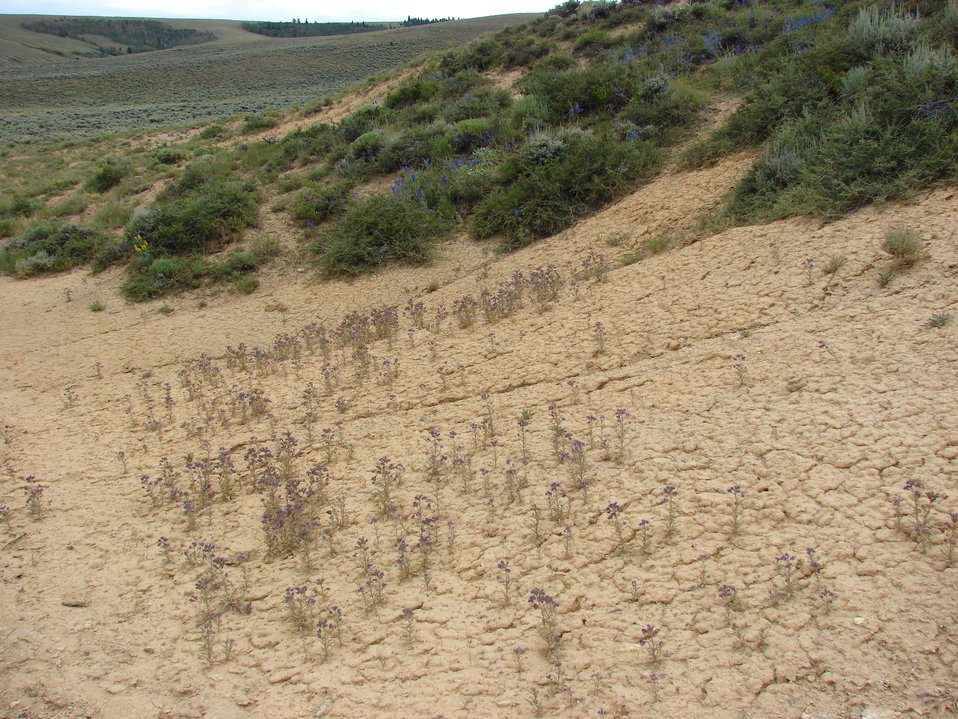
North Park Phacelia Habitat

A dense cluster of North Park phacelia growing on a particularly barren and cracked site.

Photo credit: USFWS
...........................................................................

BACKGROUND:
North Park phacelia (Phacelia formosula), a member of the waterleaf family (Hydrophyllaceae) is found in “North Park” of north central Colorado, near the small town of Walden. The bright purple flowers and lobed leaf margins make this species easy to spot in July and August. The plant is a biennial, surviving for one year as a rosette of leaves before flowering and dying the following year. The plant is found on barren exposures of the Coalmont Formation that are easily eroded (see the habitat pictures). Roughly 16,000 individuals are known from six separate populations and the entire species is known from an area measuring roughly 10 miles in either direction (north to south, east to west).

The species was discovered, at one location, in 1918 by the Colorado botanist, George Osterhout. Additional sites were not located until 1979. Because of the limited distribution, small population sizes and threats to the species, North Park phacelia was listed as endangered under the Endangered Species Act in 1982. Threats to the species today include: heavy livestock use, off-road vehicle traffic, oil and gas development, residential development, a lack of regulatory mechanisms, and potential effects from climate change.

Genetic and taxonomic research into the species’ relationships with close relatives in Larimer and Grand counties is underway. Further locations of these Phacelia are being sought to better understand these relationships.

Several populations of North park phacelia occur either partially or wholly on private and State lands. Conservation actions on these properties are voluntary. Funding is available to landowners wanting to conserve the species. Please contact Gina Glenne or Ellen Mayo at 970-243-2778 for further information on this species and ways that you can help with conservation and recovery.